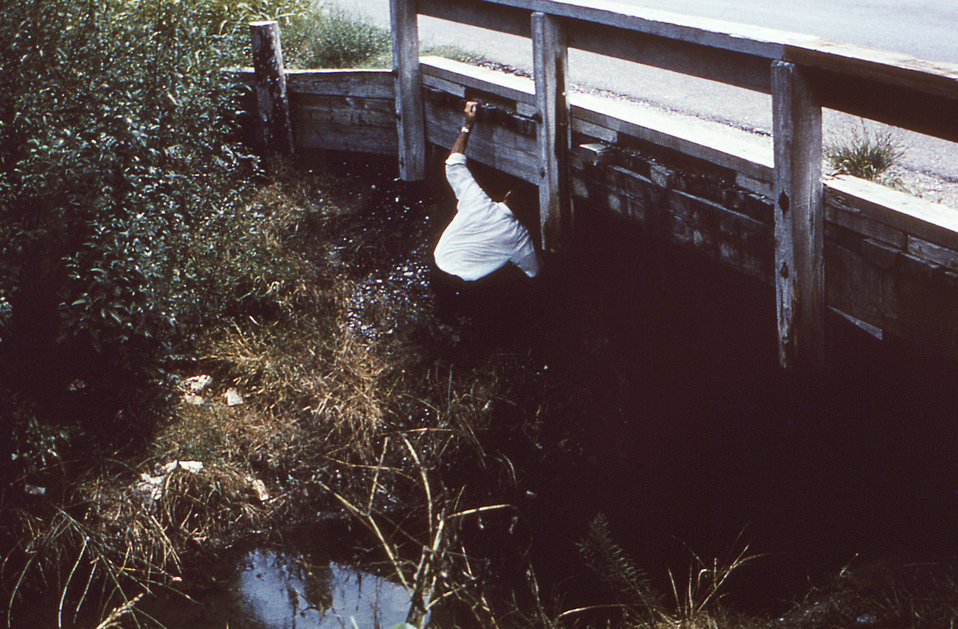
This public health employee was in the process of conducting a mosquito population study, and was collecting adult mosquitoes from beneath a bridge that passed over a small creek.